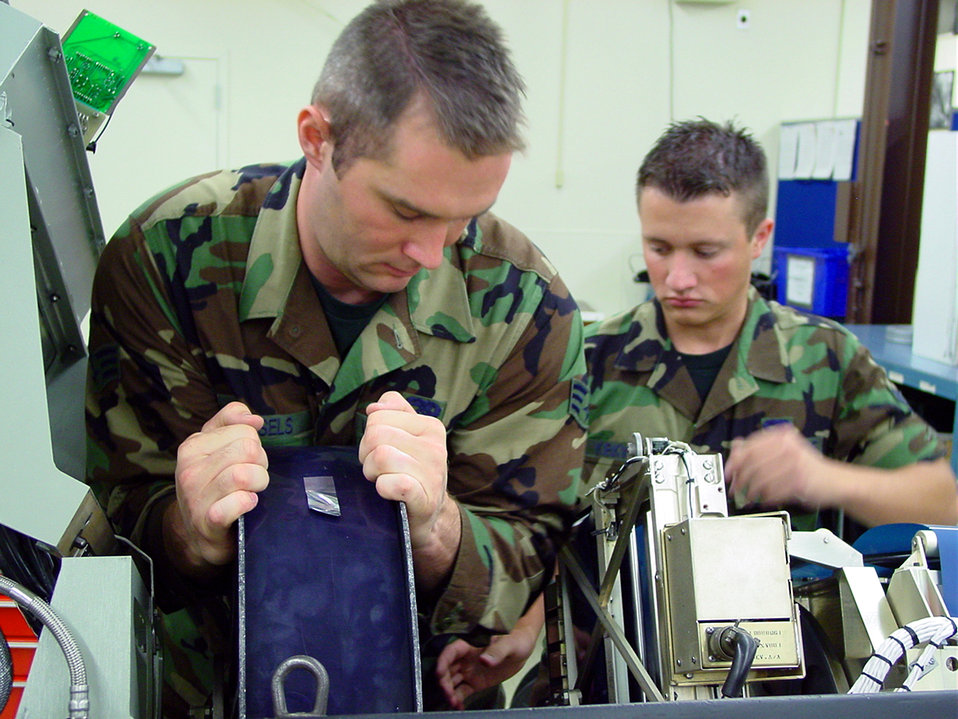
U-2 optical bar camera

BEALE AIR FORCE BASE, Calif. (AFPN) -- Senior Airman Martin Vessels (left) loads a 100-pound roll of film into a U-2 optical bar camera. Airman 1st Class Derek Kirkwood (right) delivered the film. Both are 9th Maintenance Squadron avionics sensor technicians assigned here.